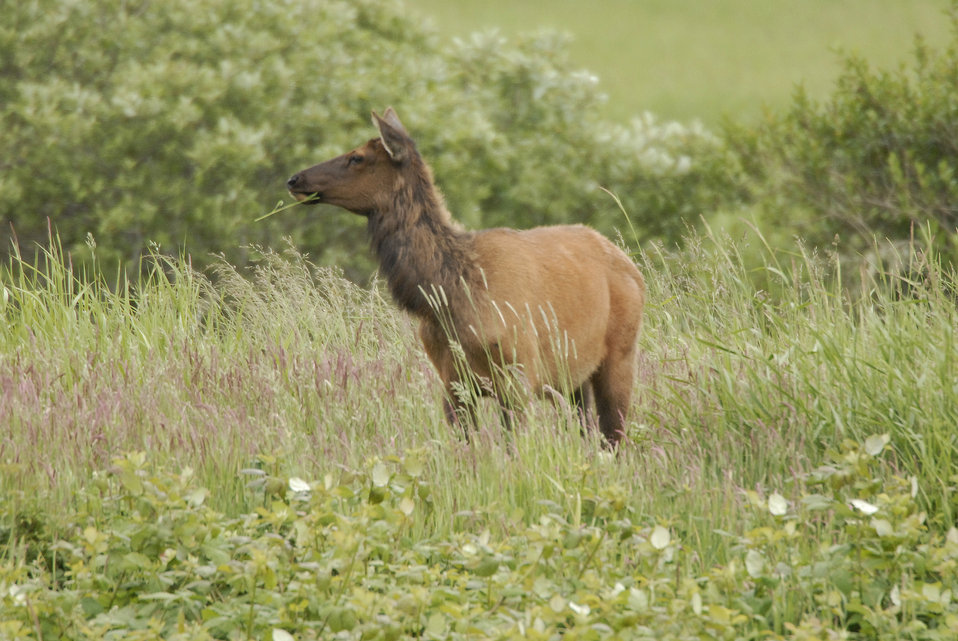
A female elk stands in a field in the Umpqua National Forest in Oregon on June 11, 2008. The elk is one of the largest species of deer in the world and one of the largest land mammals in North America and eastern Asia. Elk range in forest and forest-edge habitat, feeding on grasses, plants, leaves, and bark USDA photo by Bob Nichols.